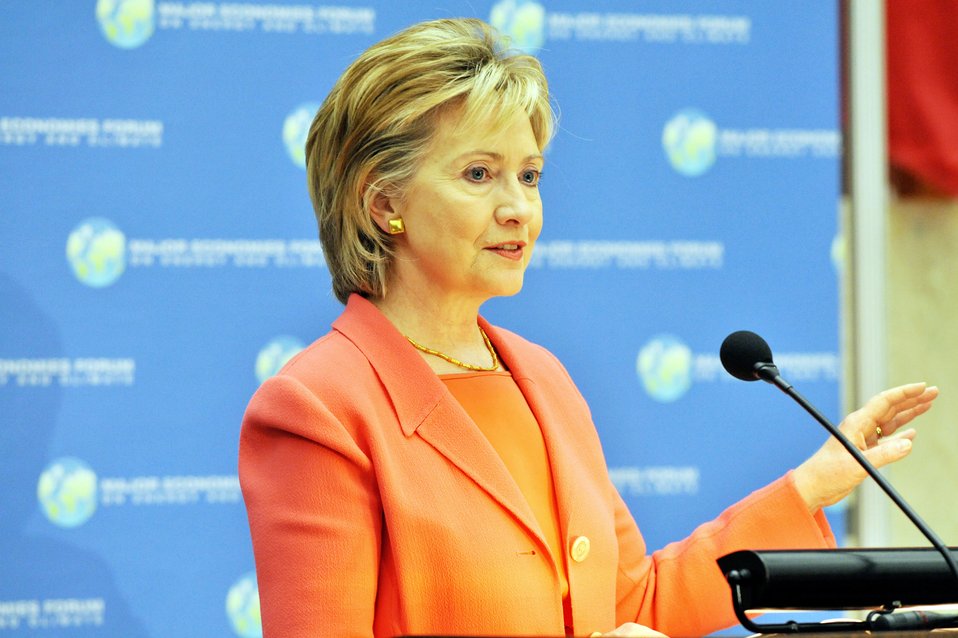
Major Economies Forum on Energy and Climate

U.S. Secretary of State Hillary Rodham Clinton provides opening remarks during the meeting of the Major Economies Forum on Energy and Climate in Washington, DC April 27, 2009.